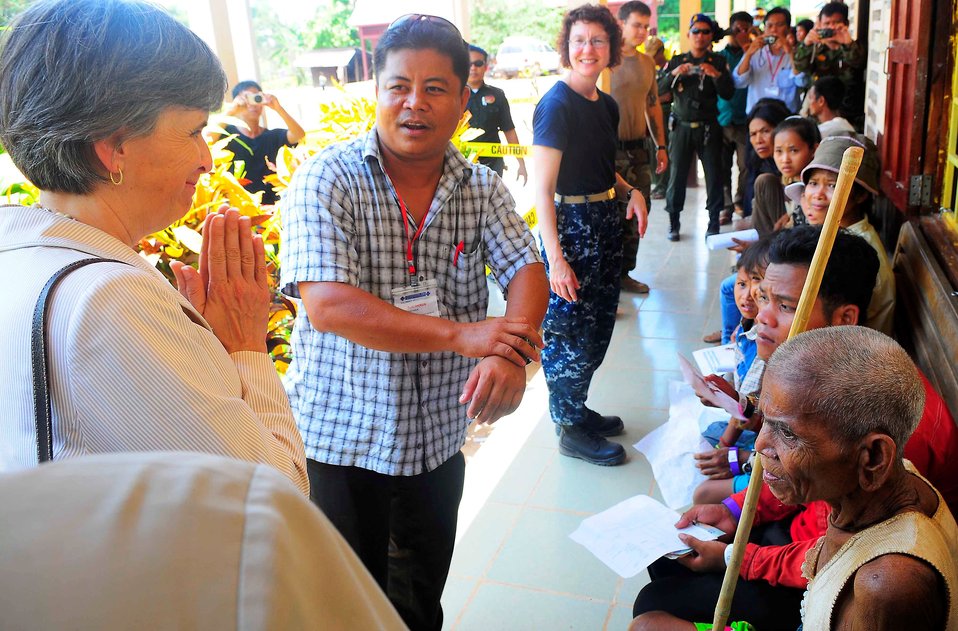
Ambassador Rodley Greets Medical Patients

U.S. Ambassador to Cambodia Carol Rodley greets medical patients during her tour of a medical civic action program in Rattanakiri, Cambodia, in support of Pacific Partnership 2010 on June 18, 2010.